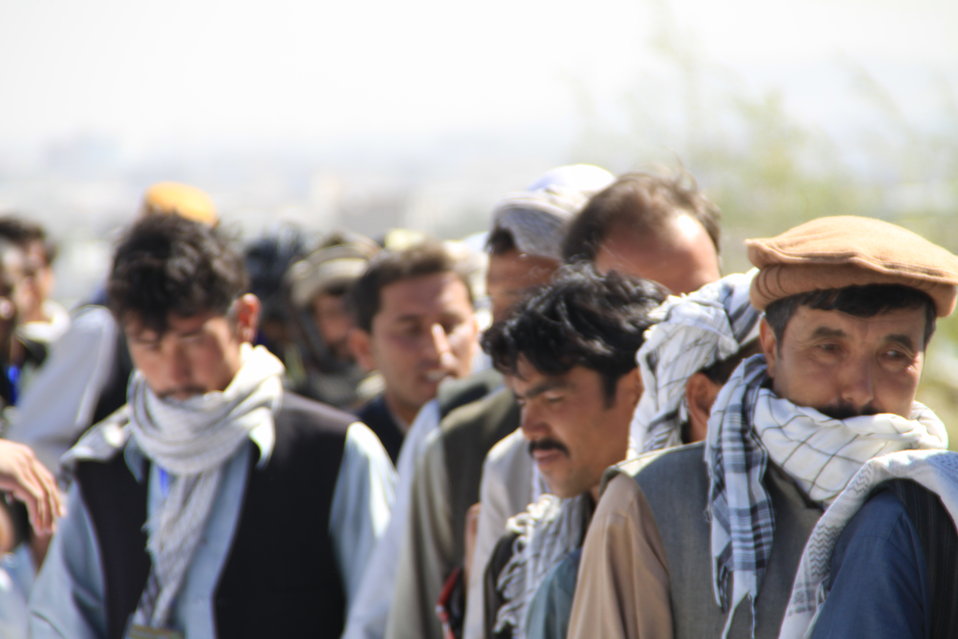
AVIPA Plus Wheat Seed Distribution 101005

US Ambassador Karl Eikenberry and USAID Acting Mission Director Kevin Brownawell joined the Minister of Agriculture, Irrigation and Livestock, H.E. Minister Mohammed Rahimi in signing a Memorandum of Understanding and distributing vouchers to area farmers for wheat and fertilizer.

US Ambassador Karl Eikenberry and USAID Acting Mission Director Kevin Brownawell joined the Minister of Agriculture, Irrigation and Livestock, H.E. Minister Mohammed Rahimi in signing a Memorandum of Understanding and distributing vouchers to area farmers for wheat and fertilizer.

US Ambassador Karl Eikenberry and USAID Acting Mission Director Kevin Brownawell joined the Minister of Agriculture, Irrigation and Livestock, H.E. Minister Mohammed Rahimi in signing a Memorandum of Understanding and distributing vouchers to area farmers for wheat and fertilizer.